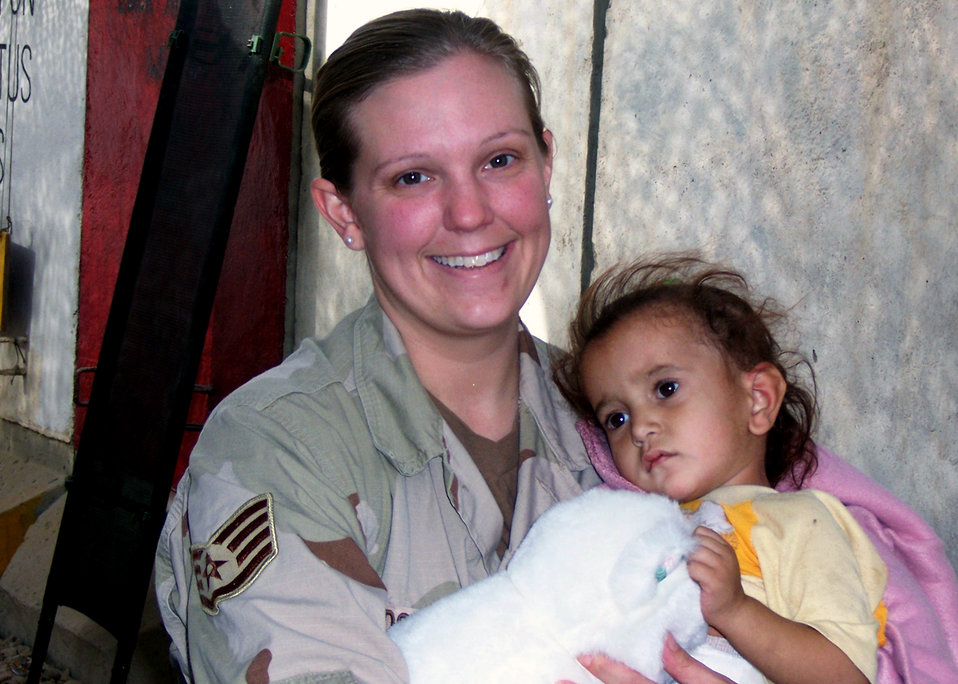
Airman supports burn clinic for Iraqi children

Staff Sgt. Tracy Davidson holds an Iraqi child at the Convoy Support Center Burn Clinic, at Forward Operating Base Scania, Iraq. Since July, Sergeant Davidson has supported the clinic three days a week; her presence has been a source of comfort for parents and female patients whose burns often cover most of the body. Sergeant Davidson is the 732nd Combat Stress Control unit NCO in charge and is deployed from Hill Air Force Base, Utah.